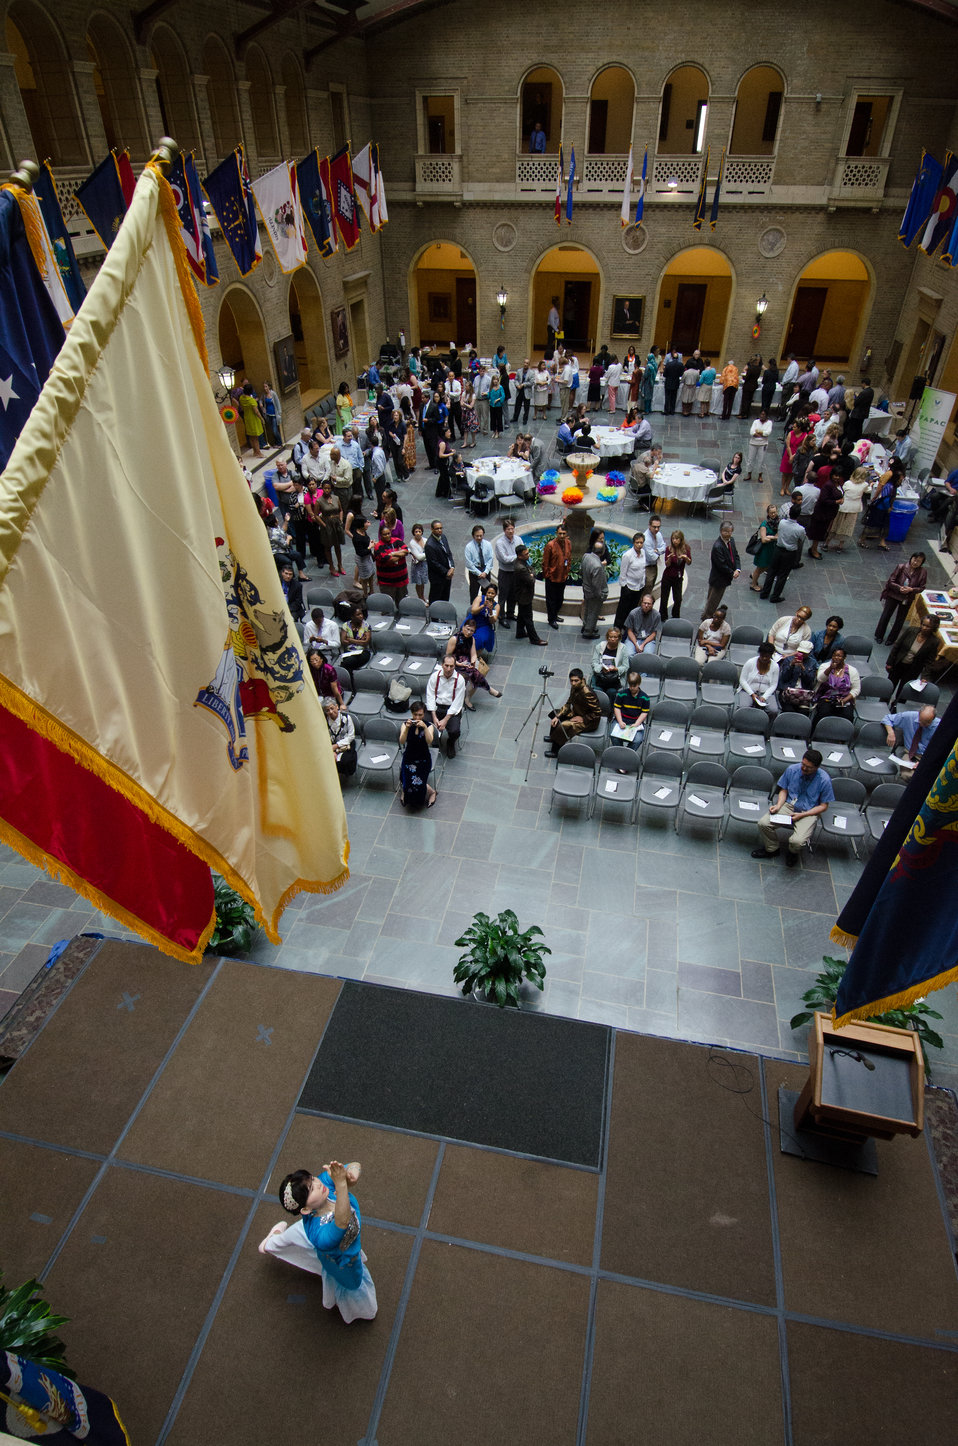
Hong Yang performs the Chinese Dai dance, “Moonlight Fengwei Zhu,” during the U.S. Department of Agriculture’s (USDA) Asian Pacific American Heritage Month Observance, at the USDA headquarters, Whitten Building patio, in Washington, D.C., on Thursday, May 23, 2013. This year’s theme is “Building leadership; Embracing the Cultural Values and Inclusions.”